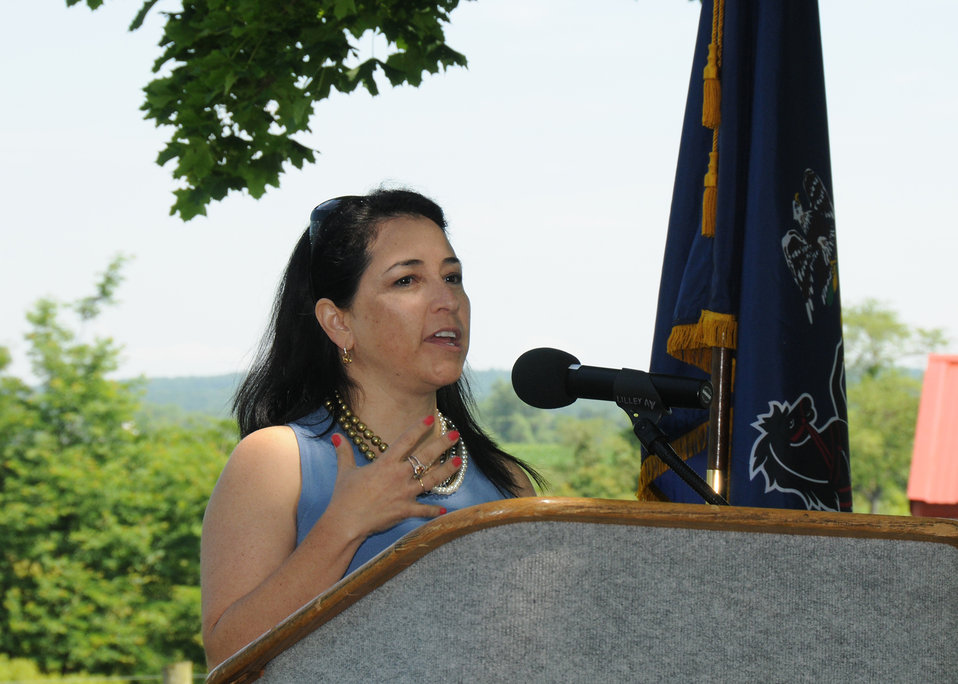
Interior Department Deputy Assistant Secretary for Water and Science Deanna Archuleta speaks about the participation of the Department of Interior in the Chesapeake Watershed Project held at the Eby-Patterson farm in Hershey, PA, on Friday, June 18, 2010. USDA photo 10di1410-139.